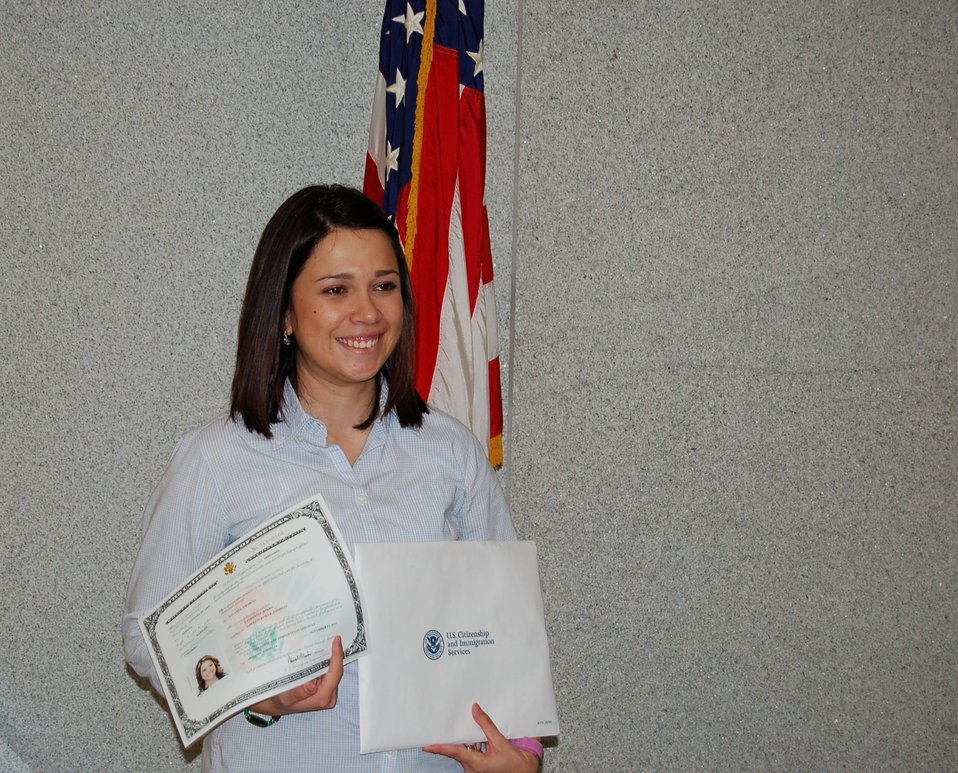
New Citizens